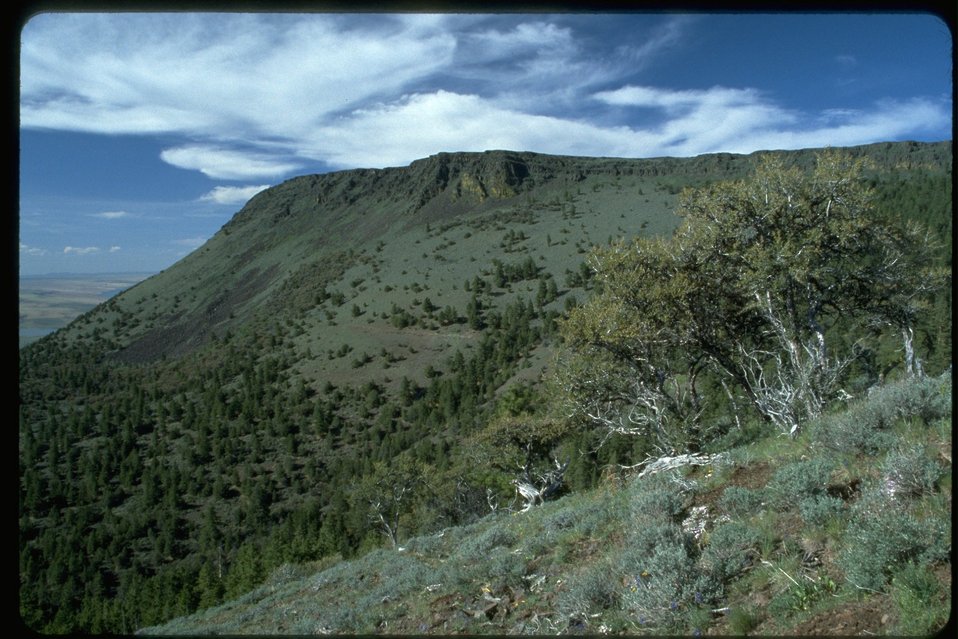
Abert Rim, view from Forest Service Hang Glider Site.